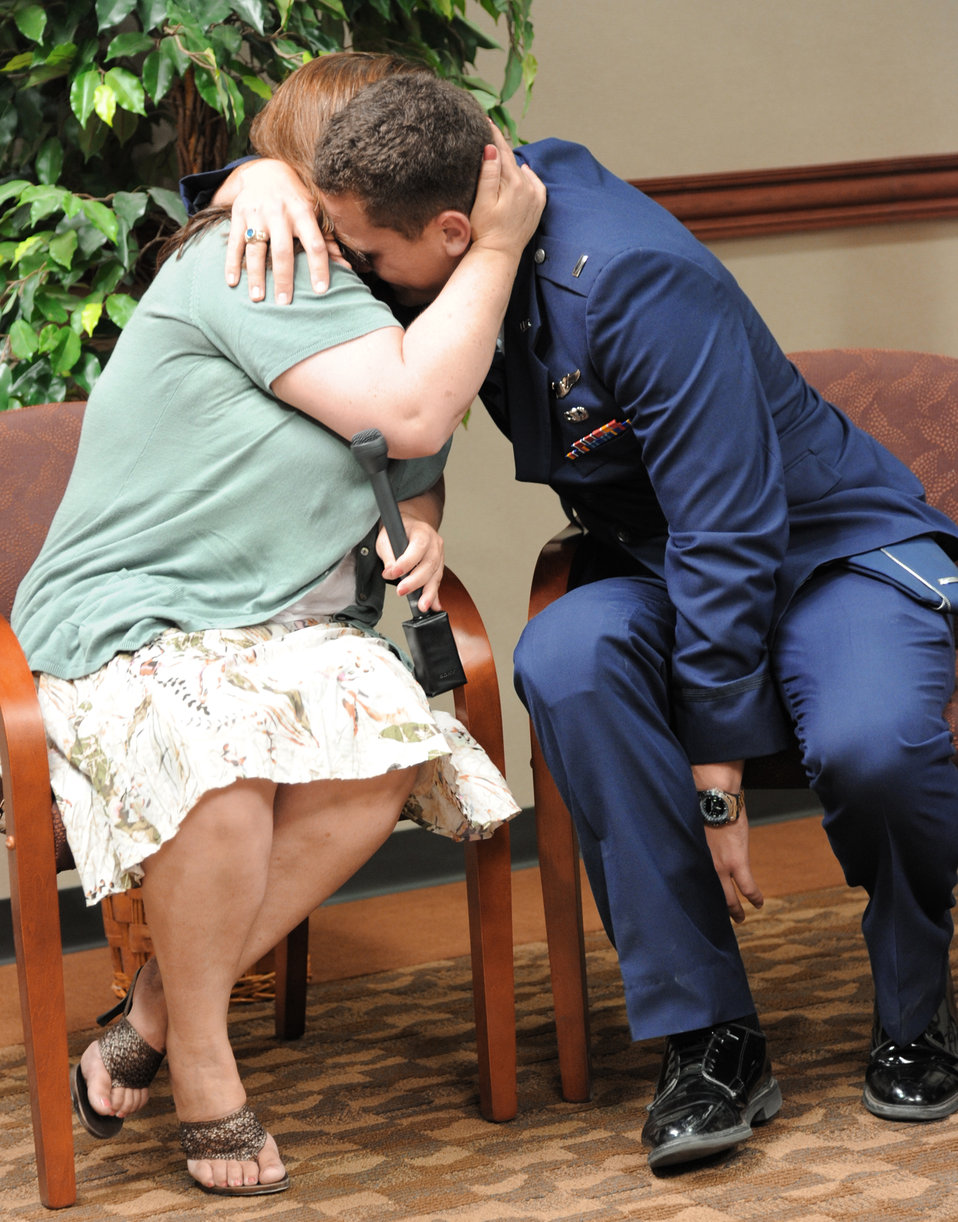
Amputee earns his wings

First Lt. Ryan McGuire embraces his mother May 20, 2011, at Laughlin Air Force Base, Texas, after graduating from Specialized Undergraduate Pilot Training. Lieutenant McGuire became the first person to graduate Air Force pilot training as an amputee. He is assigned to the 47th Operation Support Squadron.